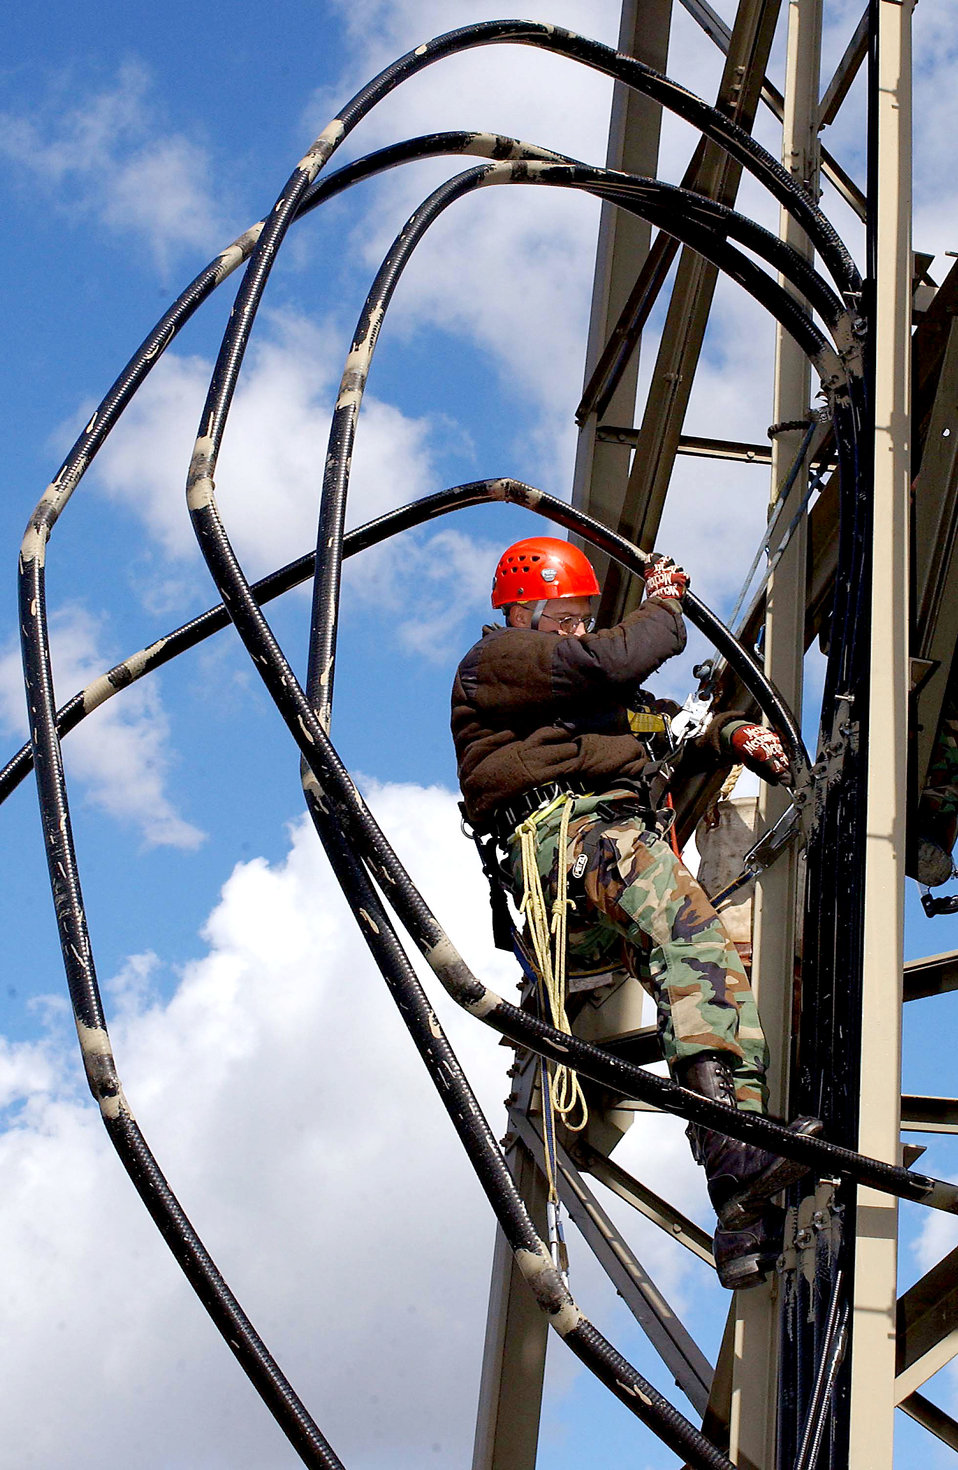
Breaking their backs

ROYAL AIR FORCE MILDENHALL, England -- Staff Sgt. Casey Helmer removes a wave guide as part of the Digital European Backbone's decommissioning. The backbone consisted of 17 sites in England and others throughout Europe forming a network of radio sites. A new system, using government-owned and -leased fiber-optic cabling technology, will allow voice, video and data transfer at higher rates. Helmer is assigned to the 1st Communications Maintenance Squadron at Kapaun Air Station, Germany.